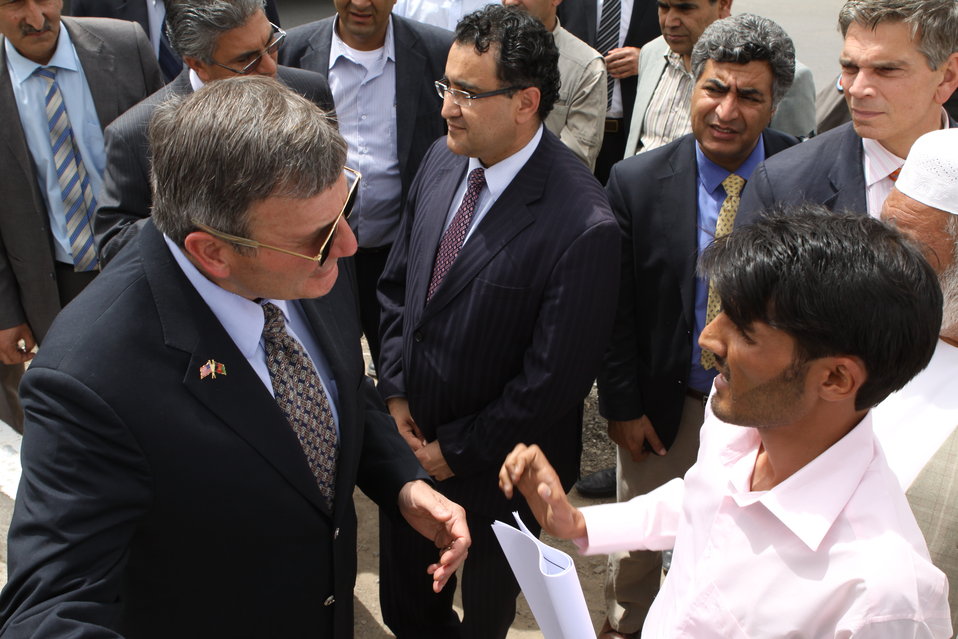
100525 Hirat Marble Conference 618